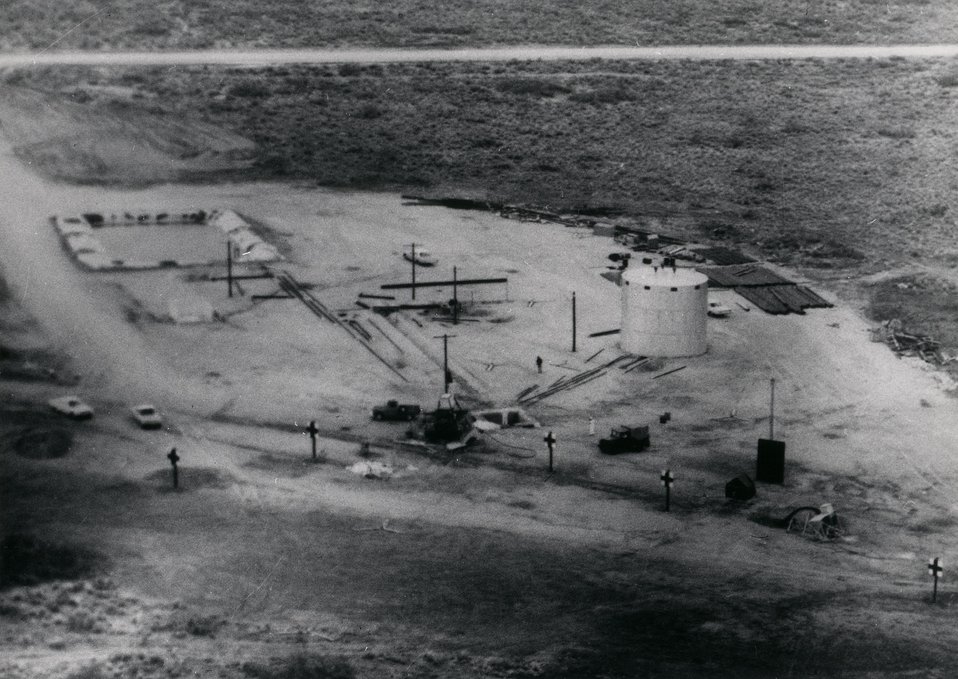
December 11, 1961...View of Ground Zero area the morning after the detonation. Radiological crews are surveying the area. Circa 1962.